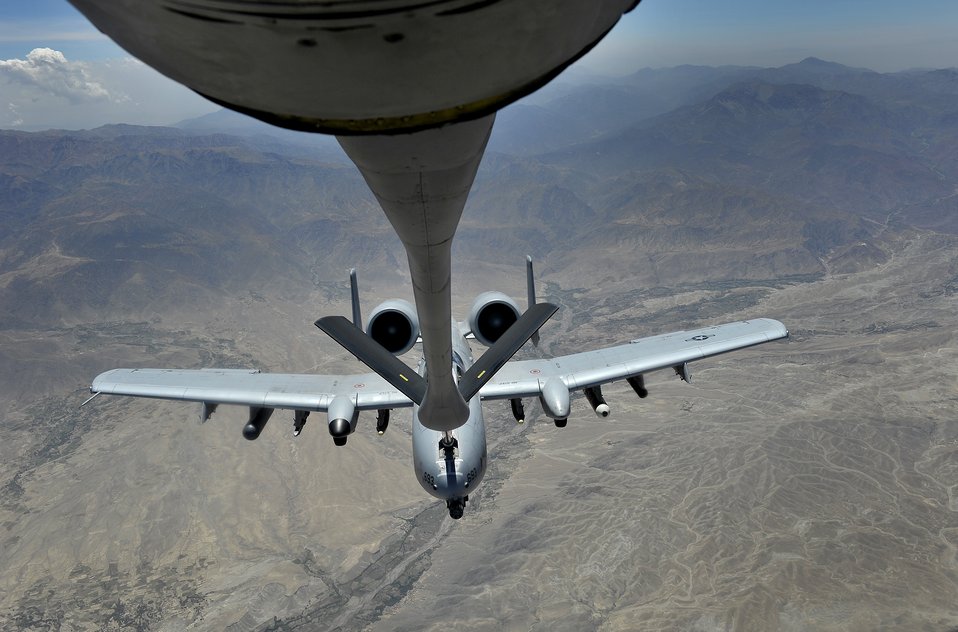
A-1- refueled

An A-10 Thunderbolt II is refueled over Afghanistan during overseas contingency operations, August 2, 2012. The 22d Expeditionary Air Refueling Sq. (EARS) conducts missions out of Transit Center at Manas, Kyrgyzstan, and plays an integral role in keeping air assets refueled in support of U.S. and coalition ground forces.